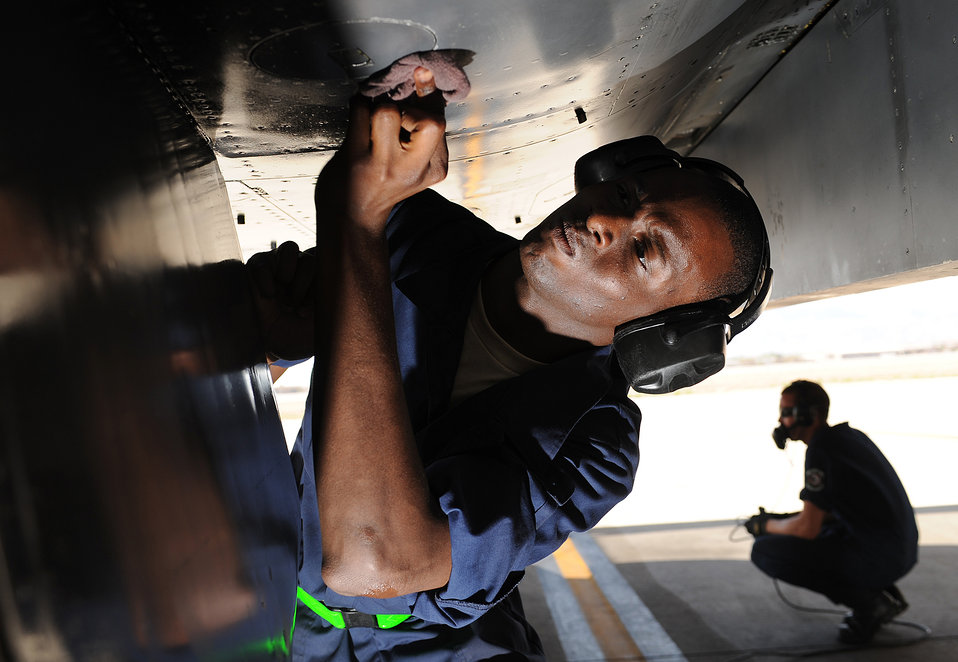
A thorough examination

Airman 1st Class Brian Cheatham and Airman 1st Class James Wilson conduct a preflight inspection on an F-15E Strike Eagle June 14, 2011, during Green Flag-West at Nellis Air Force Base, Nev. The two Airmen are crew chiefs assigned to the 4th Aircraft Maintenance Squadron at Seymour Johnson AFB, N.C.